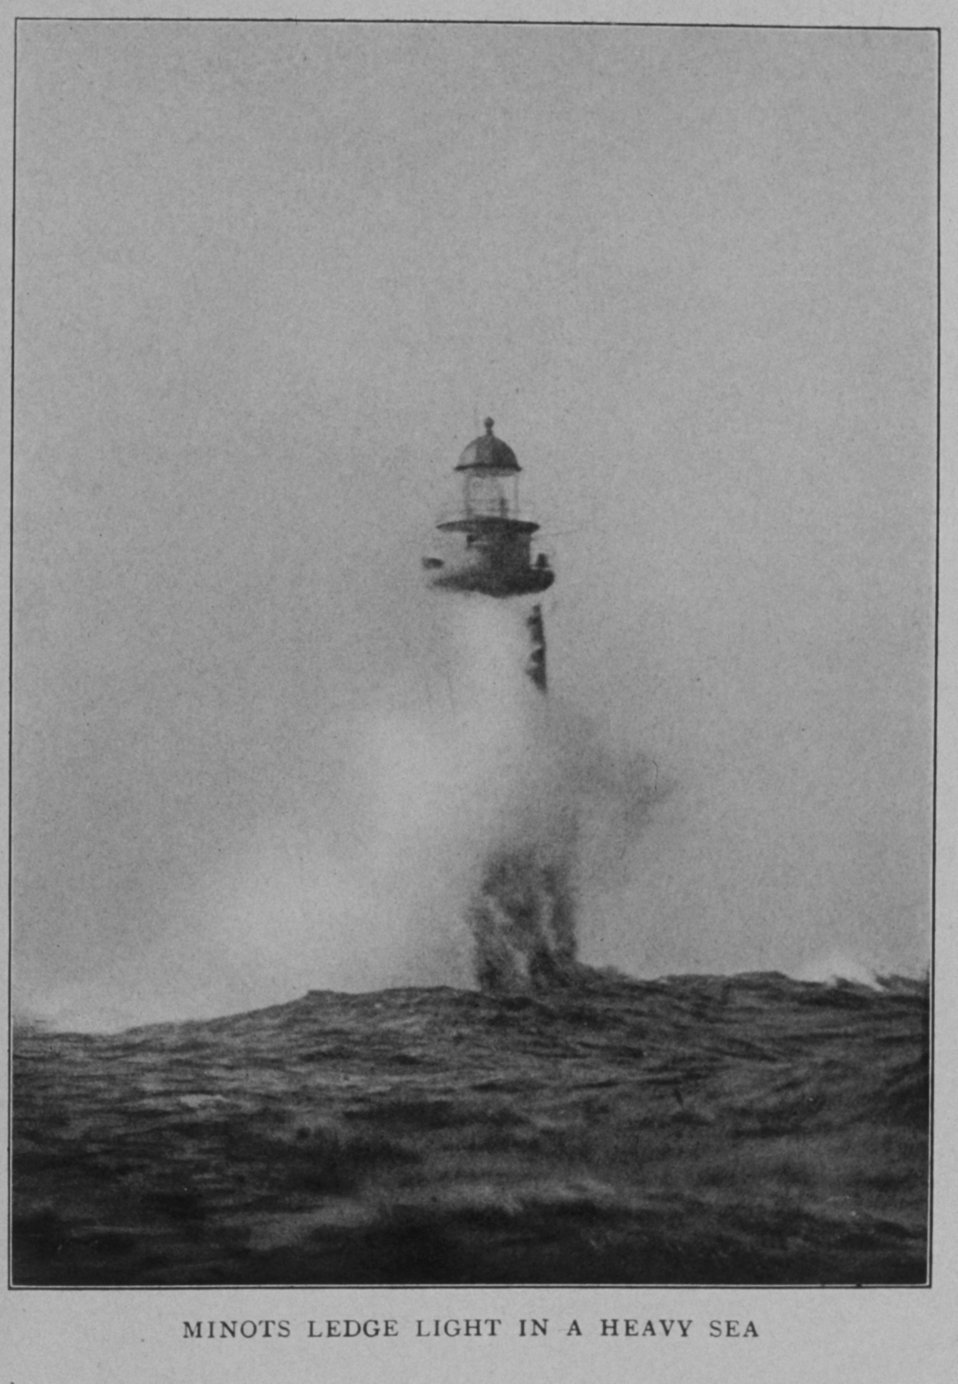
Minots Ledge Light in a heavy sea, off Boston Harbor. In: 'Lighthouses and Lightships of the United States' by George R. Putnam, 1917. Houghton Mifflin and Company, Boston. Frontispiece. Library Call No. 527.7 P98.